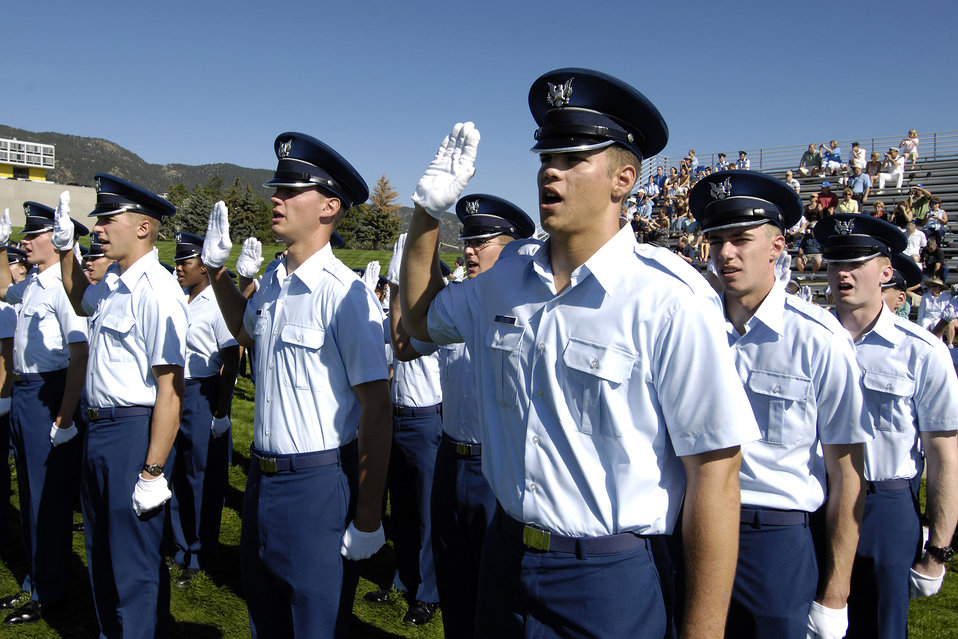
Academy cadets participate in Acceptance Day parade

U.S. Air Force Academy Basic Cadet Mark Nelsen leads fellow trainees in reciting the honor oath Aug. 6 during Acceptance Parade events on the Stillman Parade Field at the U.S. Air Force Academy in Colorado.